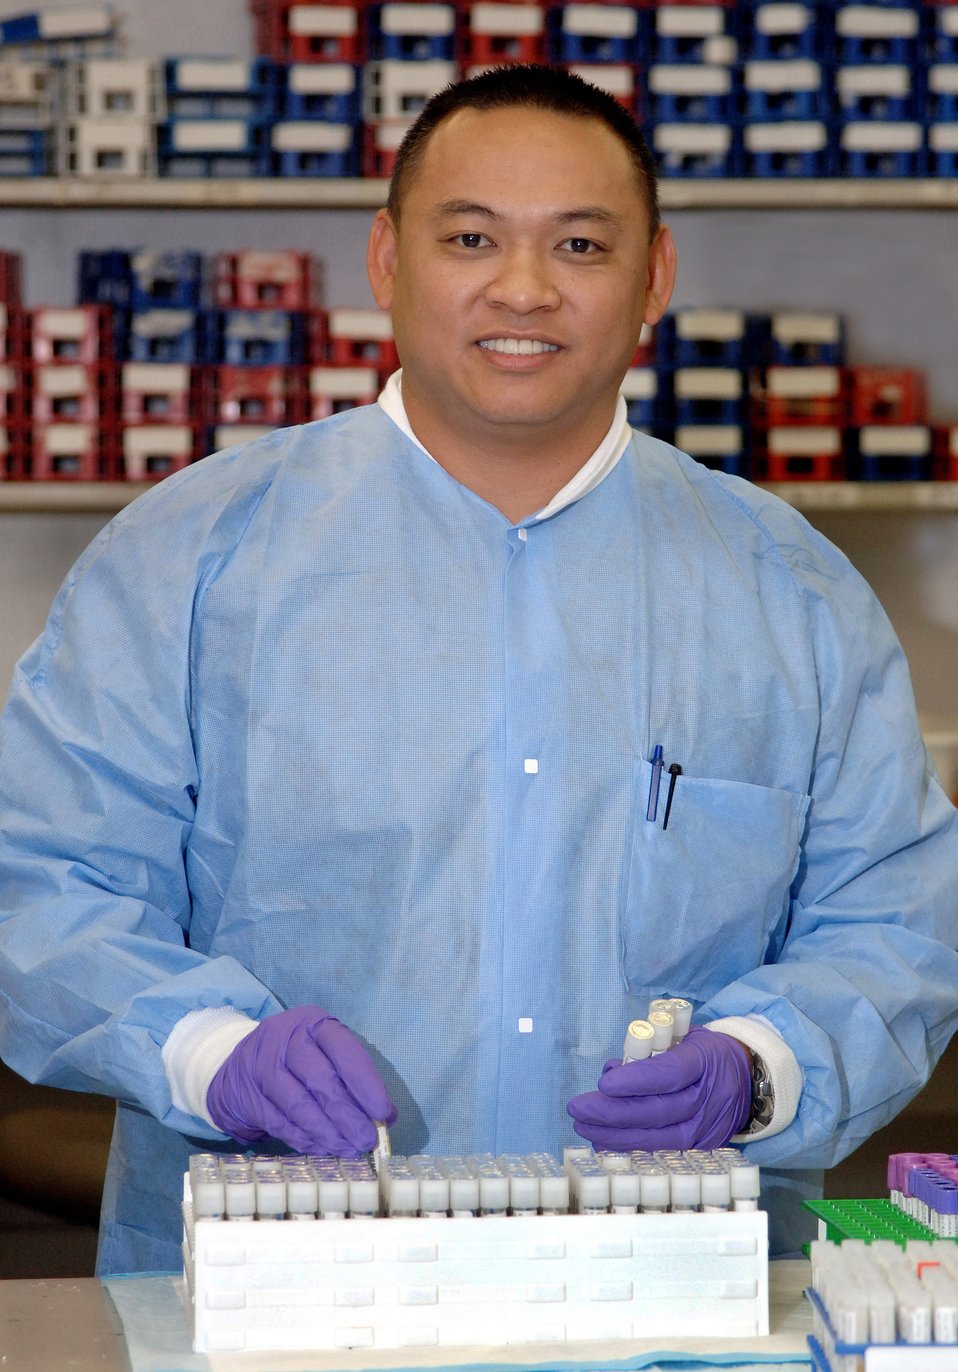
Central operations

Tech. Sgt. Cesar Abinsay works on some diagnostic specimens Wednesday, April 19, 2006. Sergeant Abinsay runs the day-to-day logistics at central operations for the Air Force Institute for Operational Health at Brooks City-Base, Texas. The institute receives specimens from more than 300 Department of Defense global facilities.